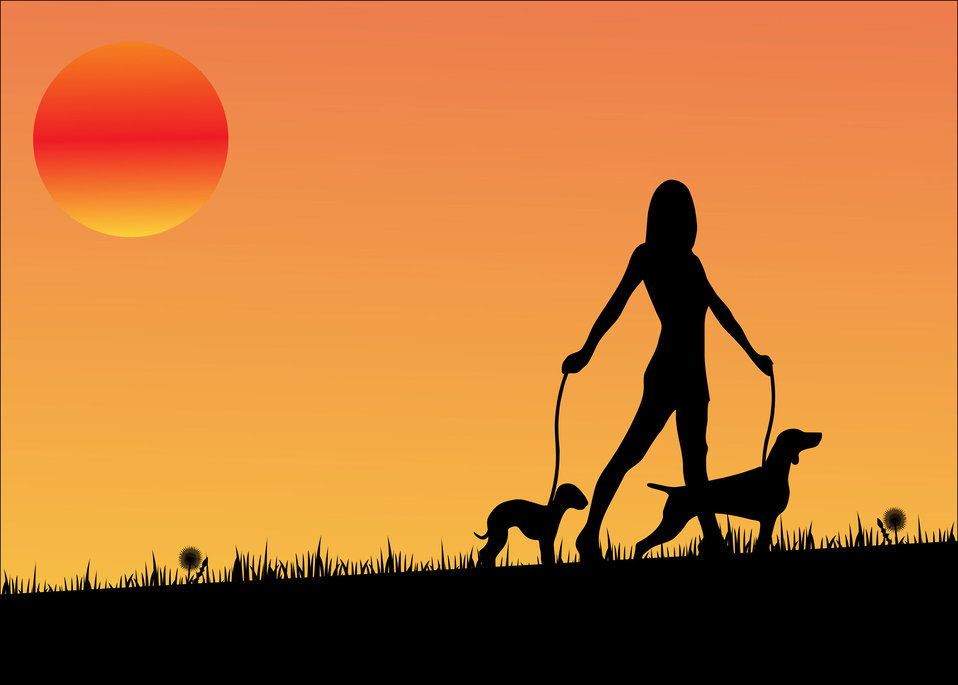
Woman dog walking

Sunset woman walking two dogs in black silhouette art illustration.